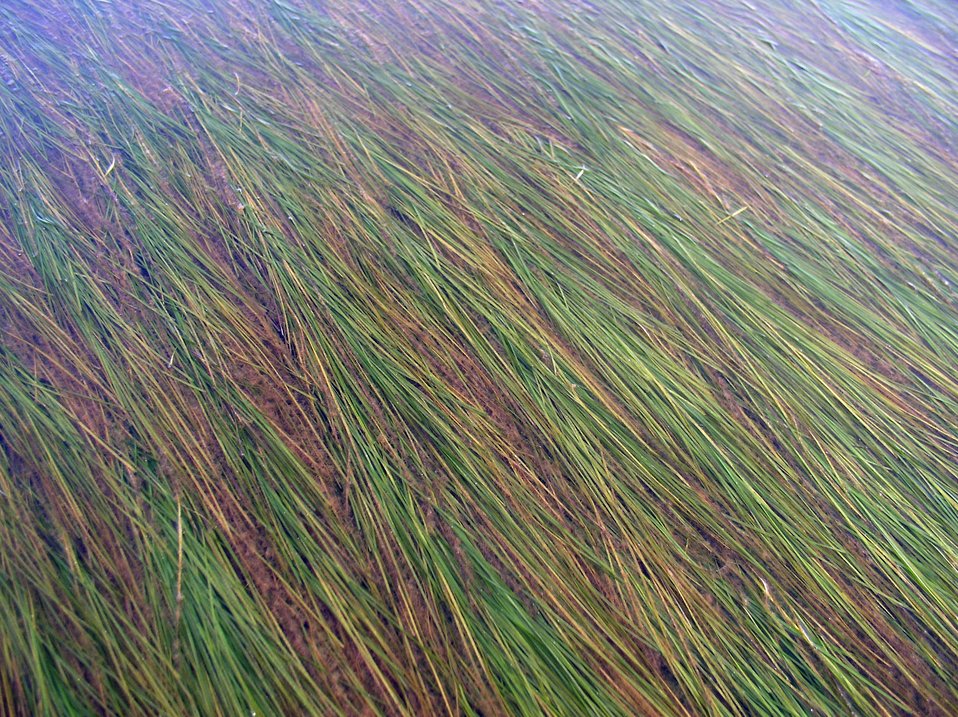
Eelgrass in Kinzarof Lagoon

Kinzarof Lagoon, Izembek National Wildlife Refuge